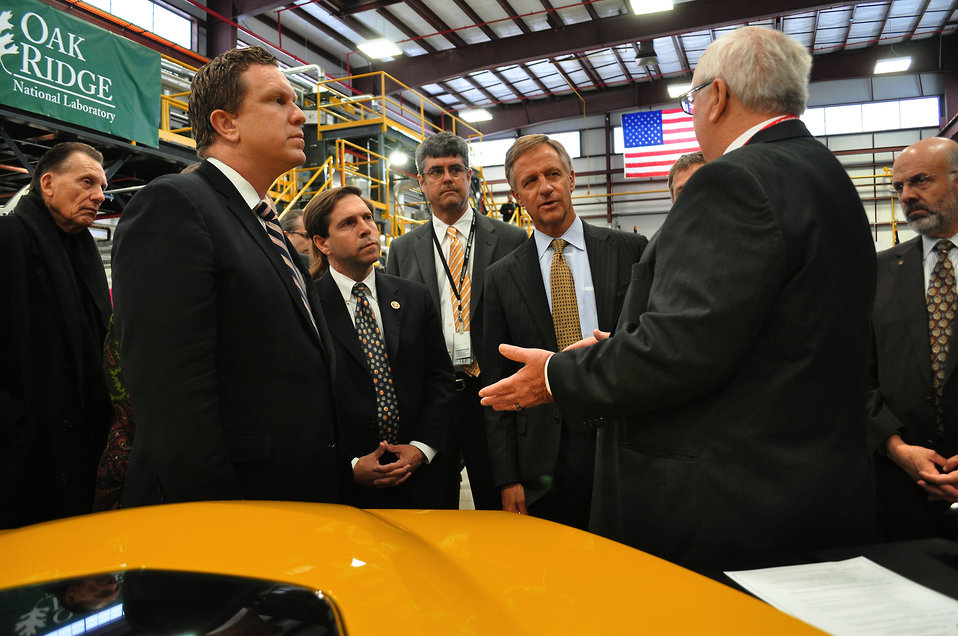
Carbon Fiber Technology Facilty Open House Oak Ridge Tennessee

13-025 DOE photo Lynn Freeny